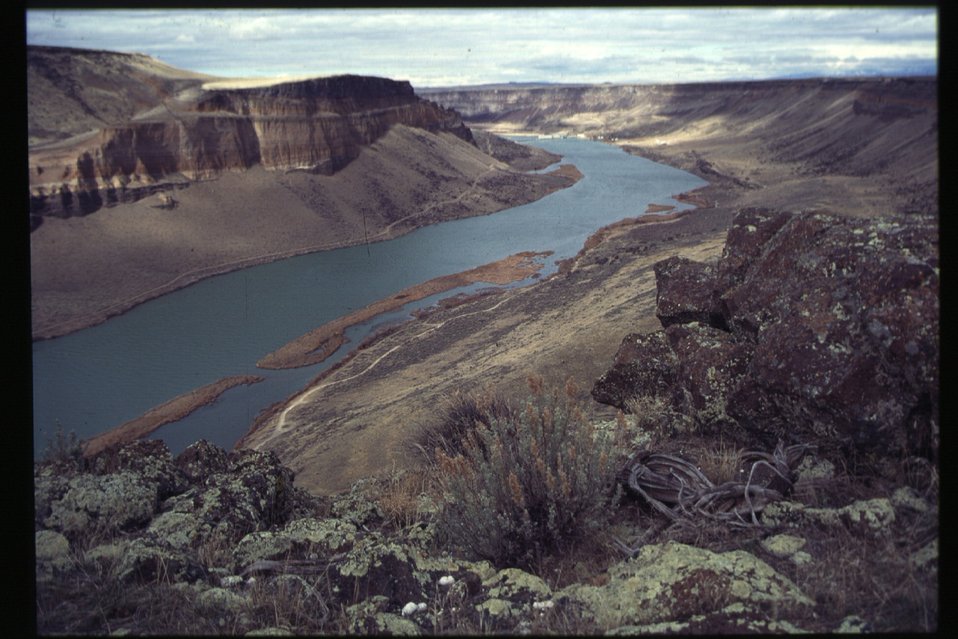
Swan Falls area Snake River Canyon Owyhee Field Office LSRD Lower Snake River District